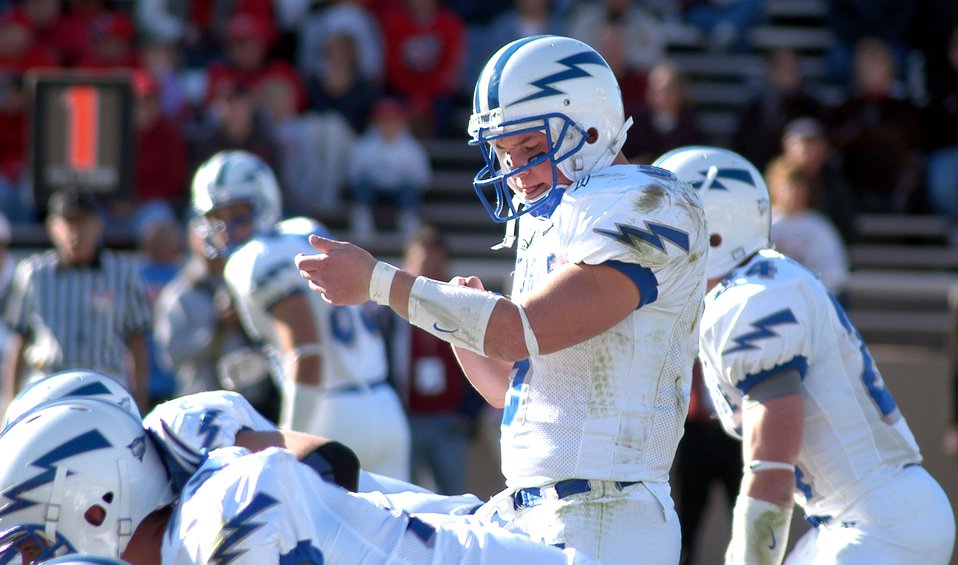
Falcons crush Lobos

ALBUQUERQUE, N.M. (AFPN) -- Air Force quarterback Shaun Carney checks his wristband before calling signals at the line of scrimmage.